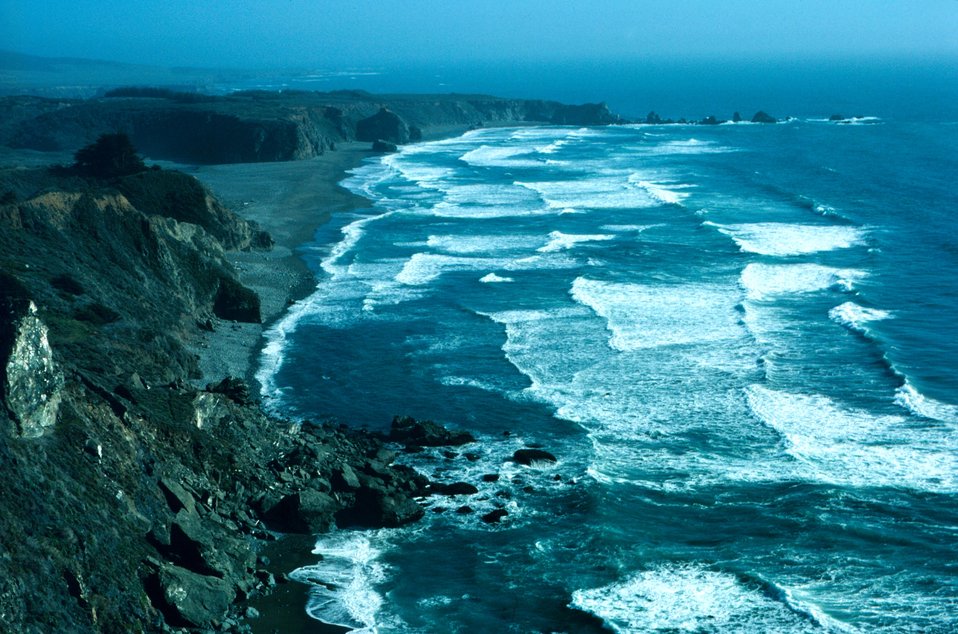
Probably northern California or southern Oregon